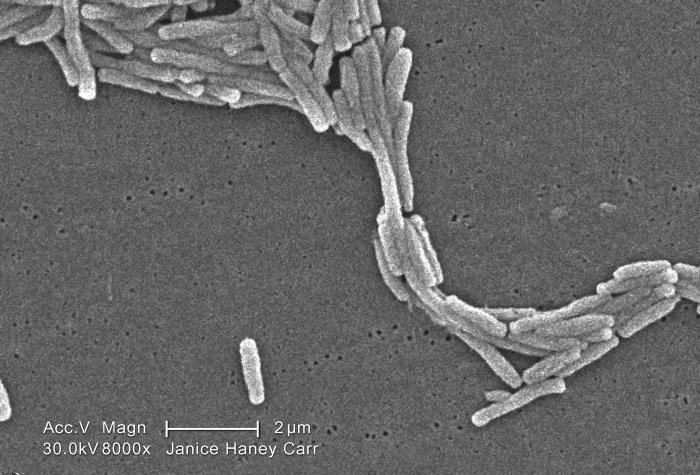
Under a moderately-high magnification of 8000X, this scanning electron micrograph (SEM) depicted a grouping of Gram-negative Legionella pneumophila bacteria. Please see PHIL 11092 through 11152 for additional SEMs of these organisms, specifically PHIL 11120 for a colorized version of this image. In some of these views you'll note the presence of flagellar appendages.